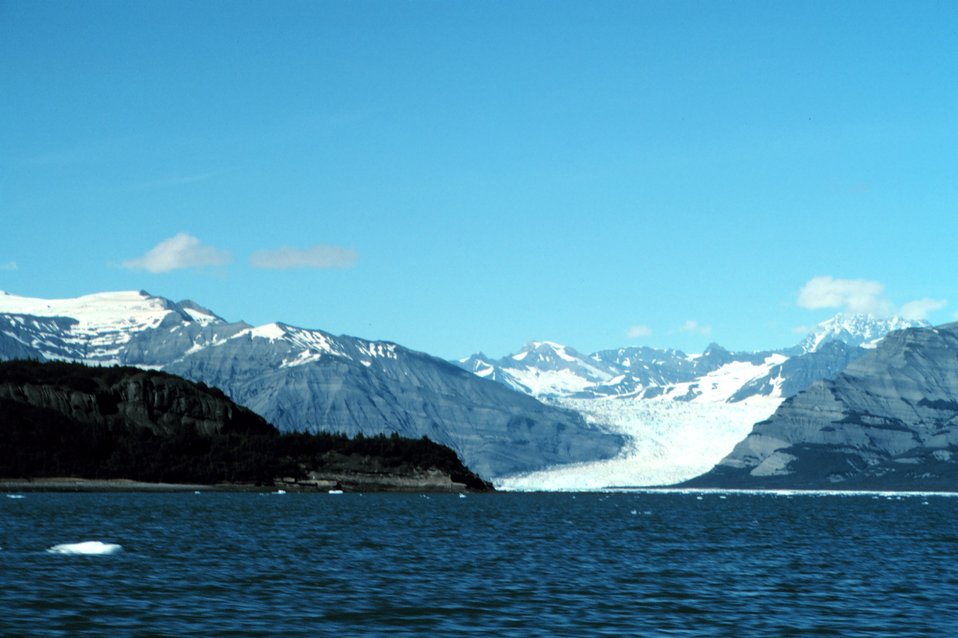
A glacier making its way to the sea in Icy Bay.